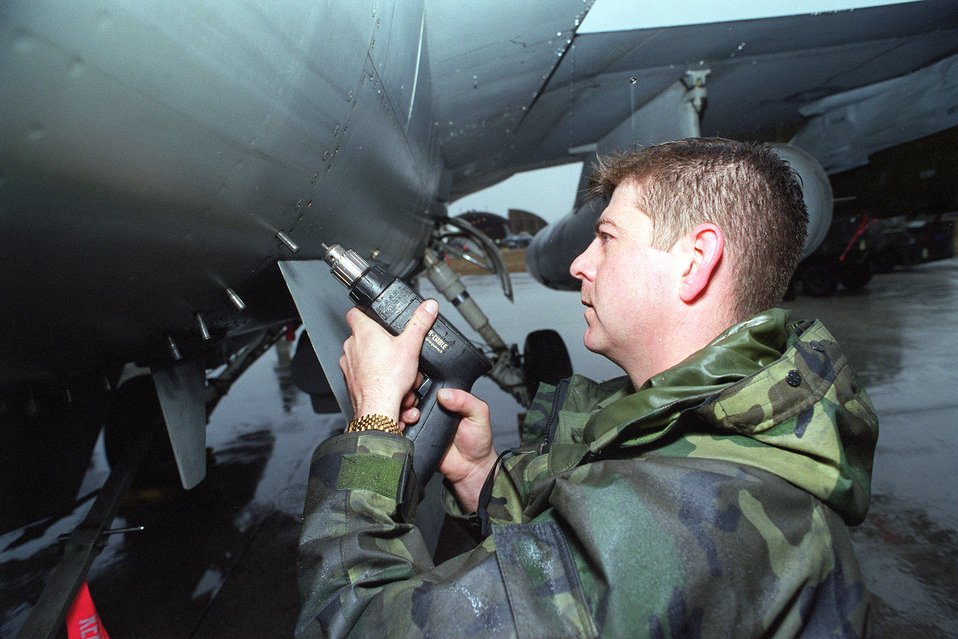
Operation Allied Force

A weapons technician prepares an F-16 Fighting Falcon at Aviano Air Base, Italy, for the next sortie in support of NATO Operation Allied Force, March 27, 1999.